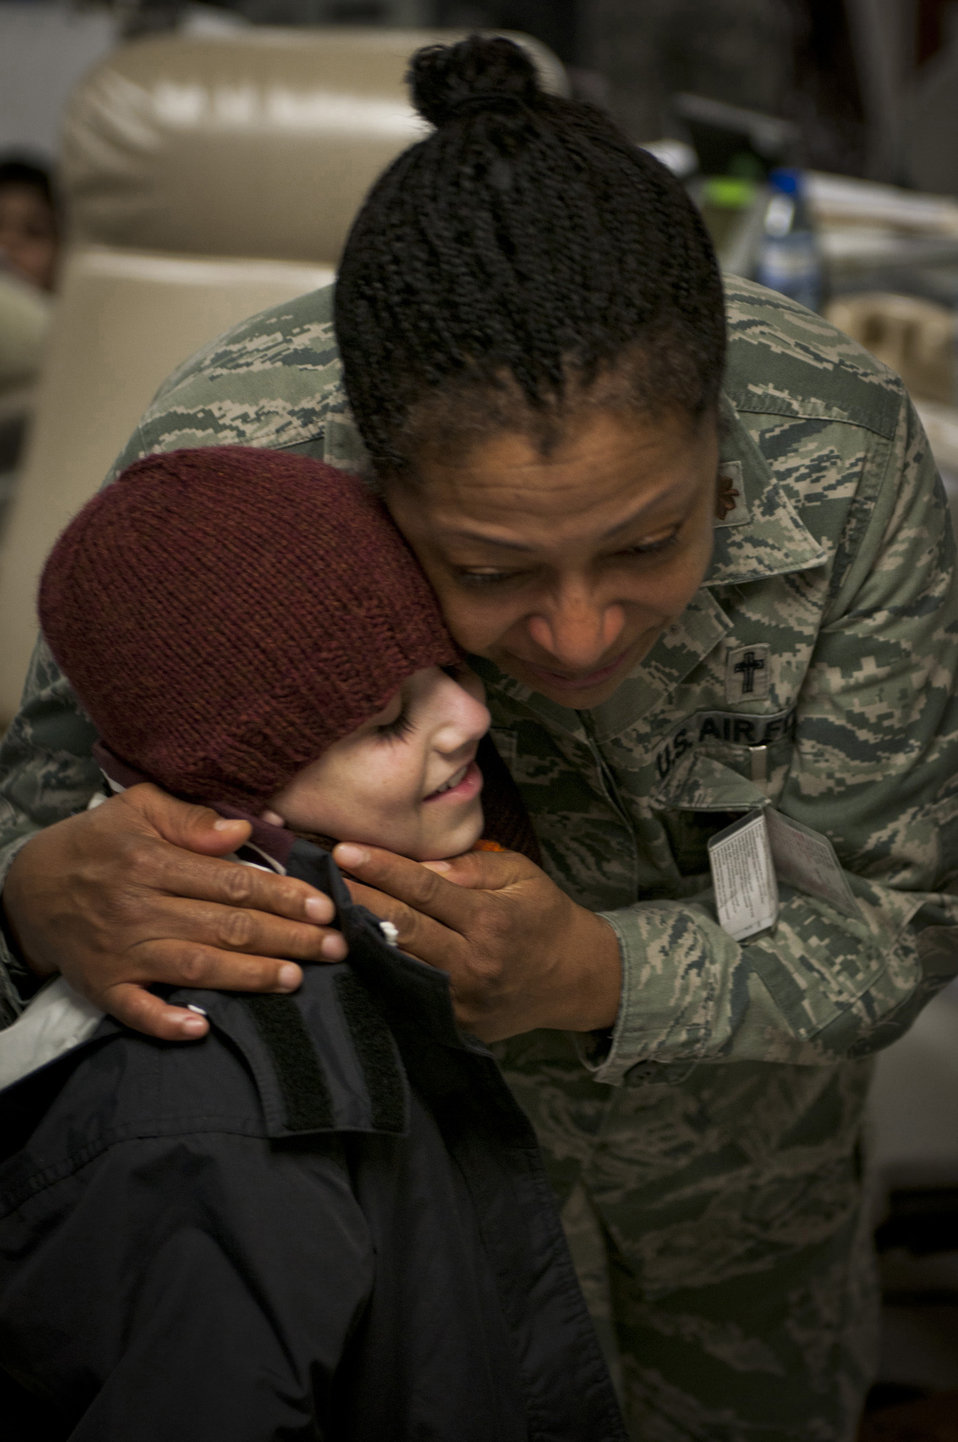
Craig Joint-Theater Hospital's longest resident inspires staff

Maj. Sherrol James cries as she hugs Najibullah goodbye Jan. 9, 2012, at the Craig Joint-Theater Hospital. Najibullah suffered a severe stomach injury July 20, 2011, in Ghazni province and had been under the care of the hospital ever since. James is the chaplain at the Craig Joint-Theater Hospital.